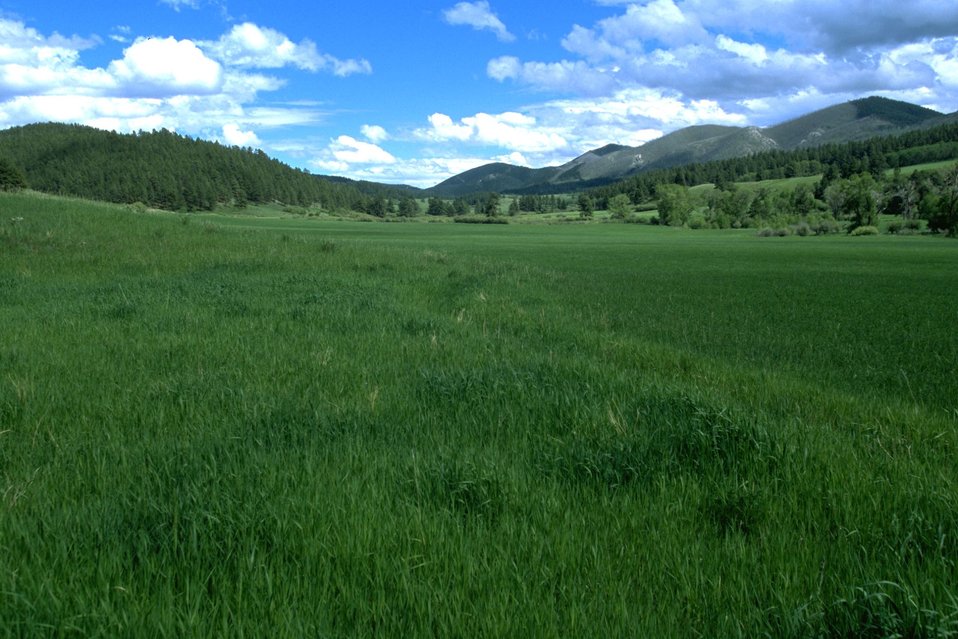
Luxuriant grasslands in the Judith Mountains area